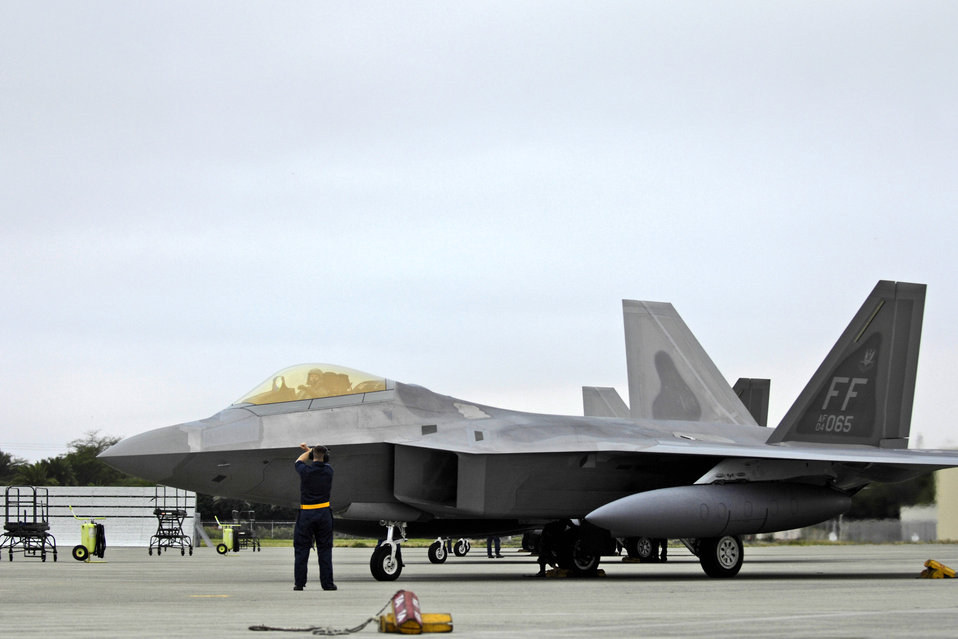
F-22 begins first overseas deployment

A crew chief marshals an F-22 Raptor to its parking spot Feb. 7 at Hickam Air Force Base, Hawaii. The F-22s and more than 250 Airmen from the 27th Fighter Squadron at Langley Air Force Base, Va., are bound for Kadena Air Base, Japan, for the aircraft's first overseas operational deployment.